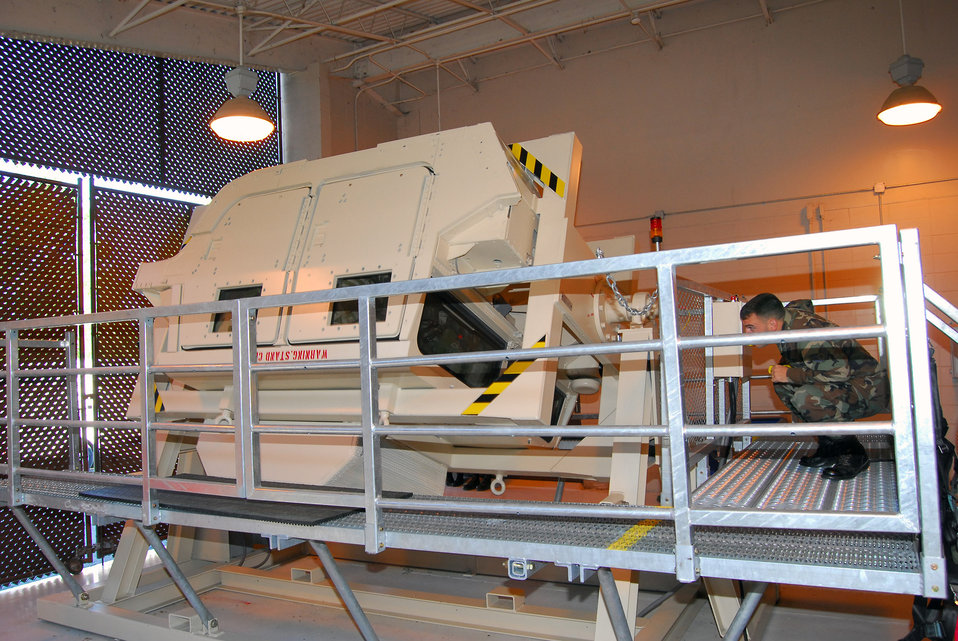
Rollover trainer turns up the HEAT on safety

Staff Sgt. Michael Rice observes several security forces Airmen training in the Humvee Egress Assistance Trainer, or HEAT, at Moody Air Force Base, Ga. The HEAT realistically simulates a vehicle rollover, allowing crew members to prepare for such a crisis in a safe environment. Sergeant Rice is assigned to the 820th Security Forces Group Training and Technology Center.